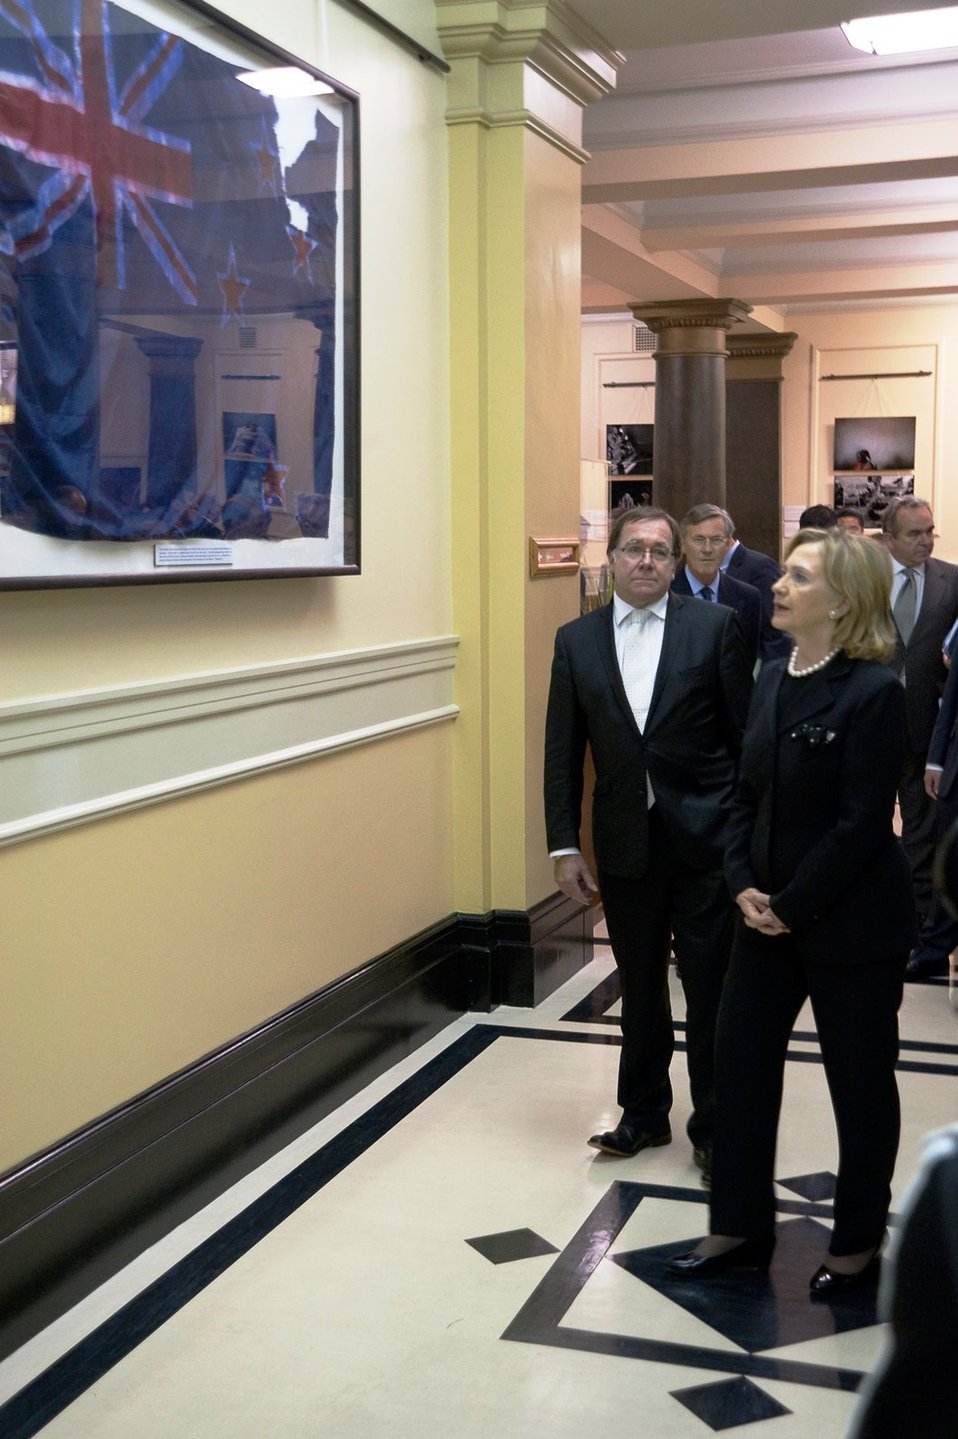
Secretary Clinton Looks at a Flag Recovered From the World Trade Center With New Zealand Foreign Minister McCully

U.S. Secretary of State Hillary Rodham Clinton looks at a flag recovered from the wreckage of the World Trade Center with New Zealand Prime Minister Murray McCully in the corridor of the Parliament building in Wellington, New Zealand, on November 4, 2010.